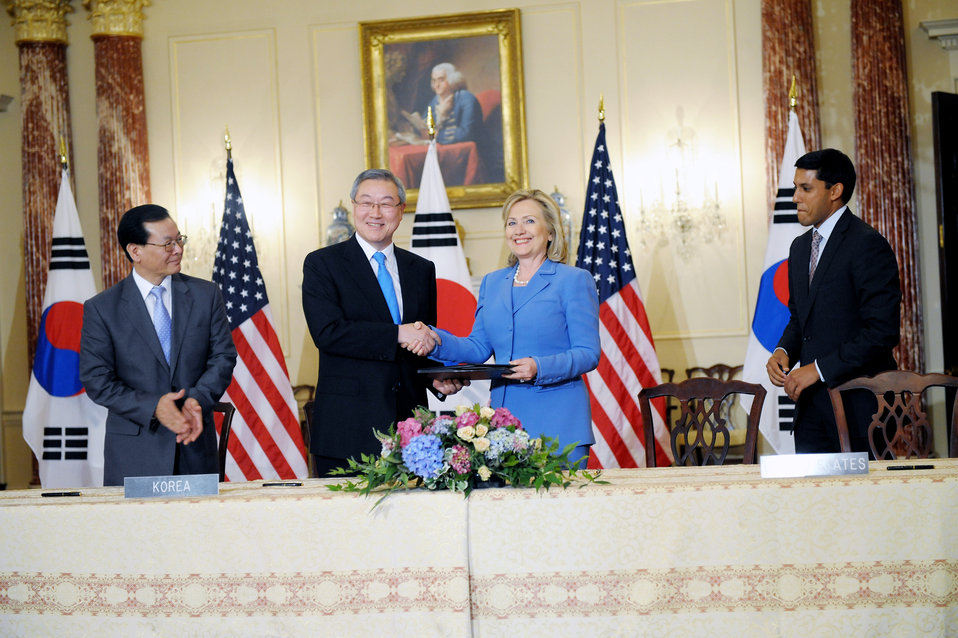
Secretary Clinton Shakes Hands With Korean Foreign Minister Kim Sung-Hwan

U.S. Secretary of State Hillary Rodham Clinton shakes hands with Korean Foreign Minister Kim Sung-Hwan after a signing ceremony at the U.S. Department of State in Washington, D.C., on June 24, 2011.